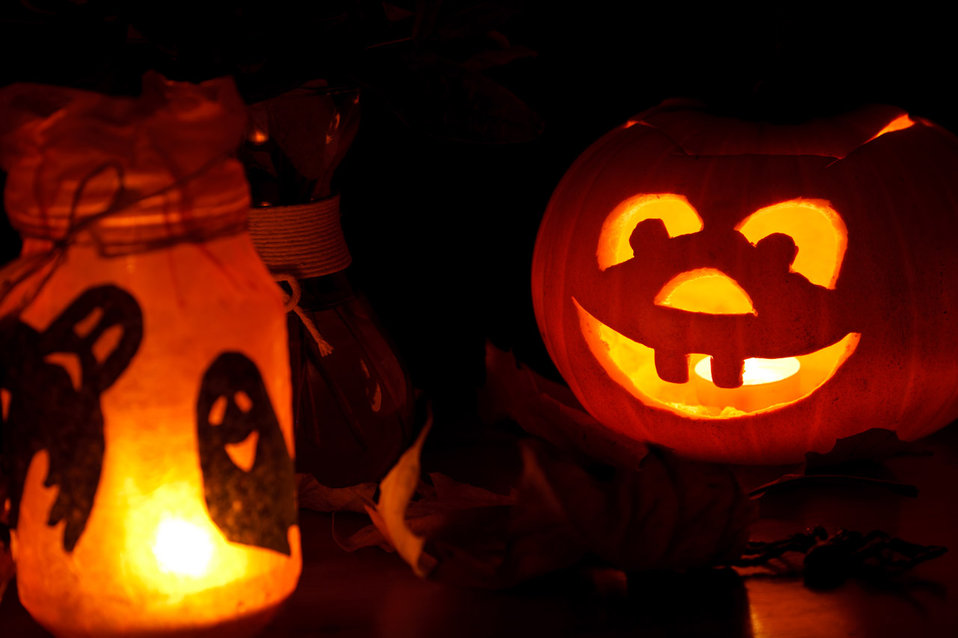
Halloween pumpkin and lights

Halloween pumpkin lantern with dark autumn decoration.